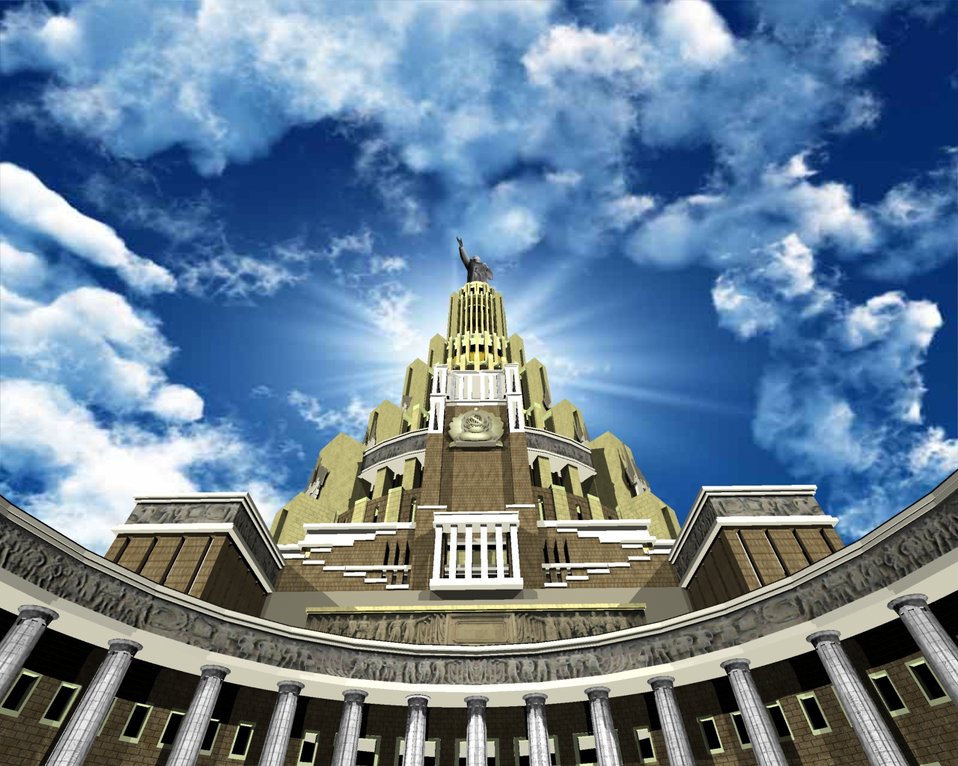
Русский: Дворец советов (Дворец Верховного совета СССР). Выполнен в 3D Max по проекту 30-х годов Palace Of Soviets the Soviet Union, (done in 3D Max)